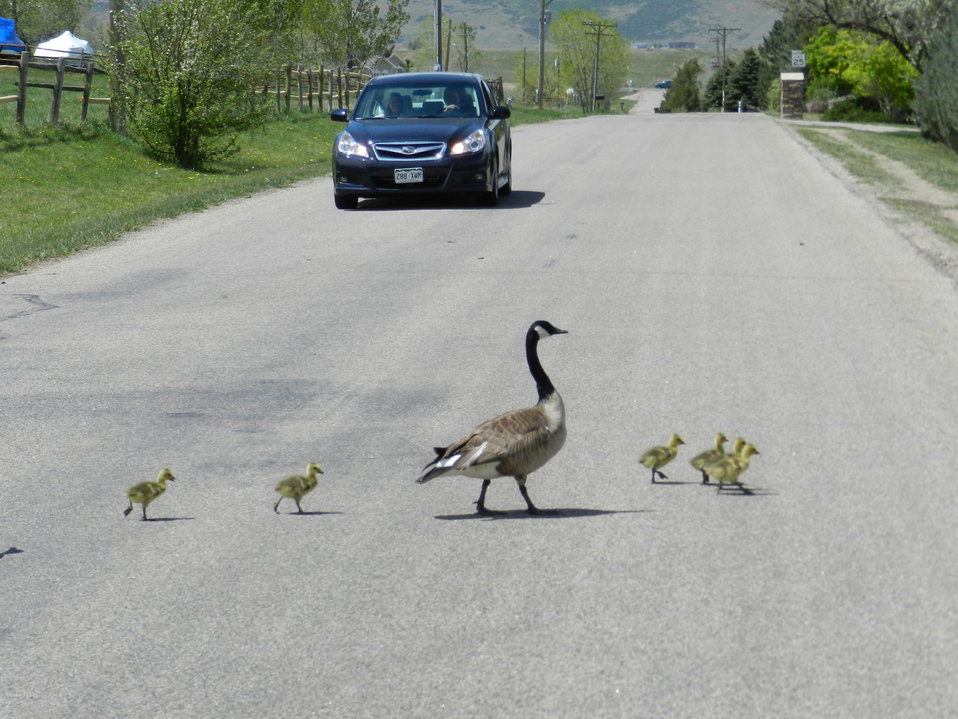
Canada Goose with goslings crossing street in Fort Collins, CO.

Credit: Pedro 'Pete' Ramirez, Jr. / USFWS